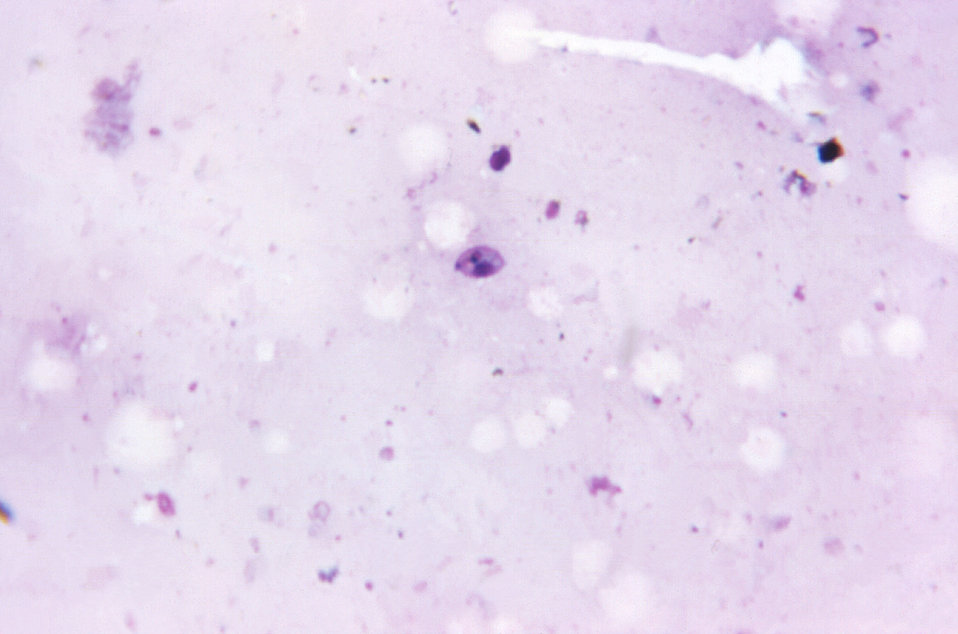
This Giemsa-stained photomicrograph revealed a Leishmania sp. protozoan, which had been taken from a smear of a suspected leishmanial lesion, and magnified 1125X.